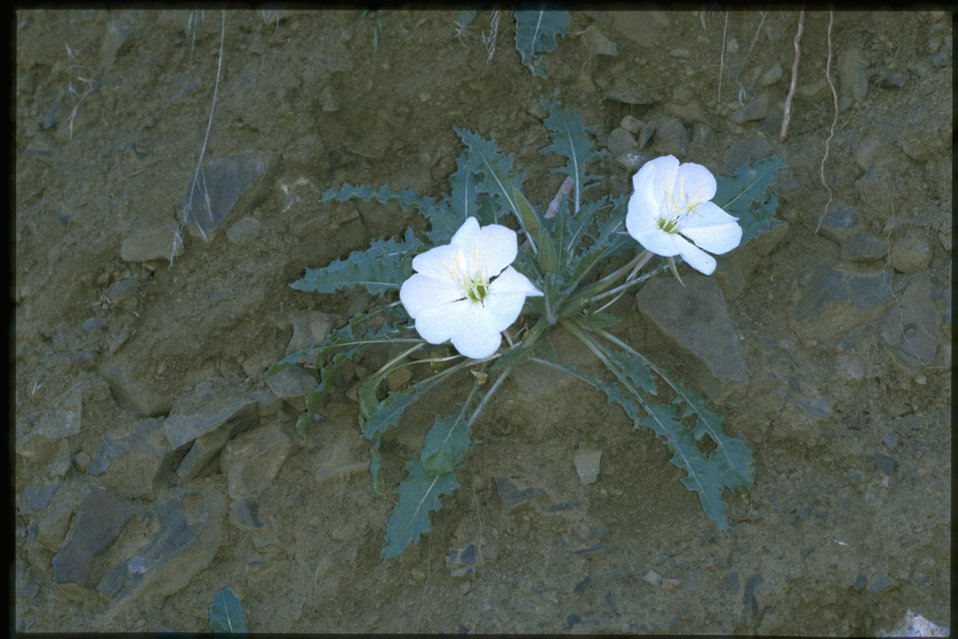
Medium shot of Oenothera.